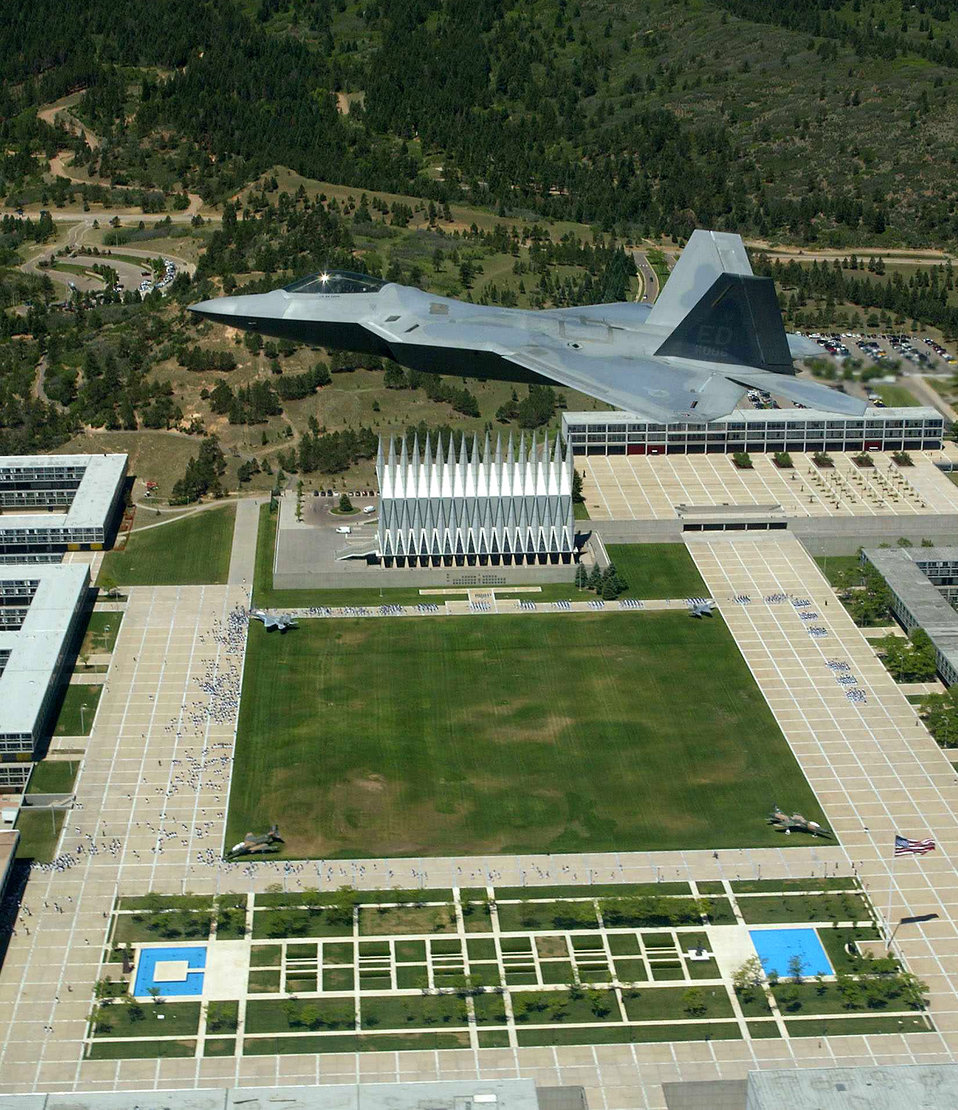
A Raptor moment

U.S. AIR FORCE ACADEMY, Colo. -- An F/A-22 Raptor soars over the grounds here June 1. This flight was flown by Lt. Col. Dawn Dunlop, an F/A-22 test pilot and 1988 academy graduate, in support of the Class of 2004's graduation parade. Colonel Dunlop and the Raptor are from Edwards Air Force Base, Calif.